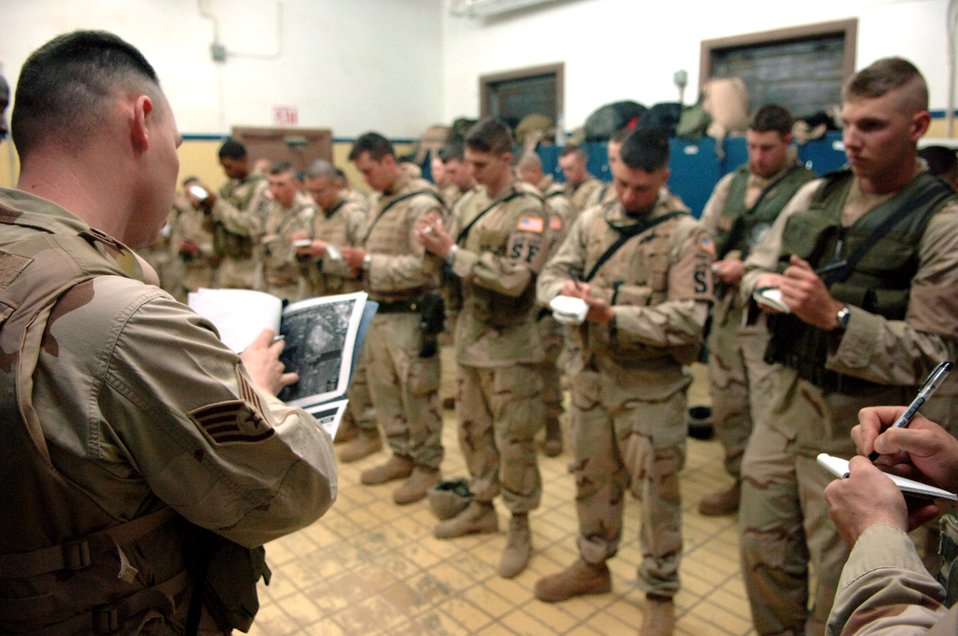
Security forces Airmen protect Iraq's combat airpower hub

Technical Sgt. Kenneth Prendergast gives a local intelligence briefing to security forces Airmen who write down important information during guardmount Feb. 15 at Balad Air Base, Iraq. Sergeant Prendergast is assigned to the 332nd Expeditionary Security Forces Squadron.